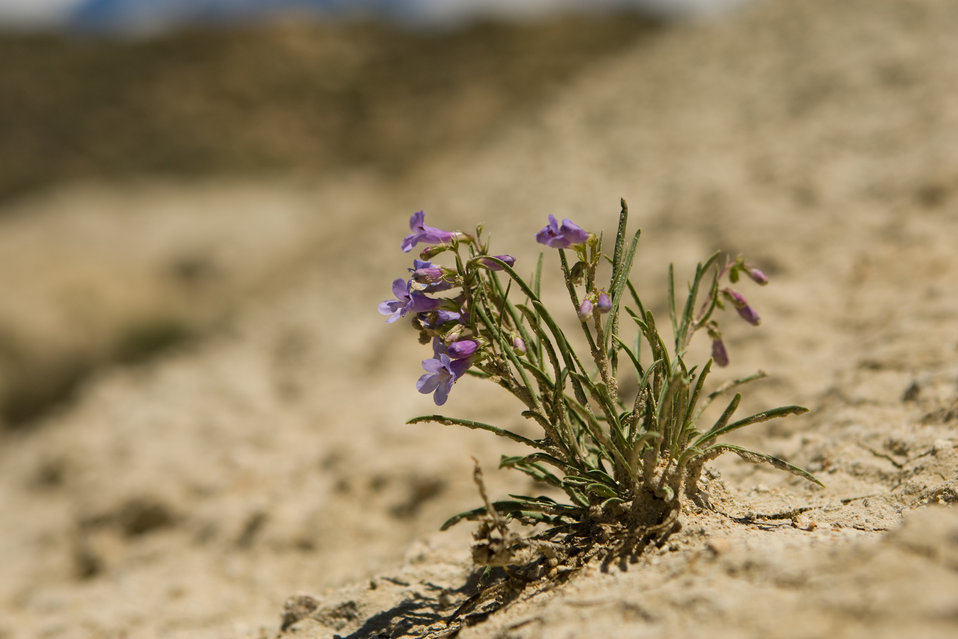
Colorado Rare Plant Conservation Initiative

The Colorado Rare Plant Conservation Initiative (RPCI) is a partnership of 23 statewide and regional agencies, private organizations, and academic institutions working to conserve 121 rare plants in Colorado. As part of these efforts the group developed the Colorado Rare Plant Conservation Strategy, developed Best Management Practices to reduce energy development impacts, addressed climate change, and developed focused strategies for the conservation of individual species at eight priority landscapes. The group has also worked to coordinate volunteer efforts for plant conservation across the state.